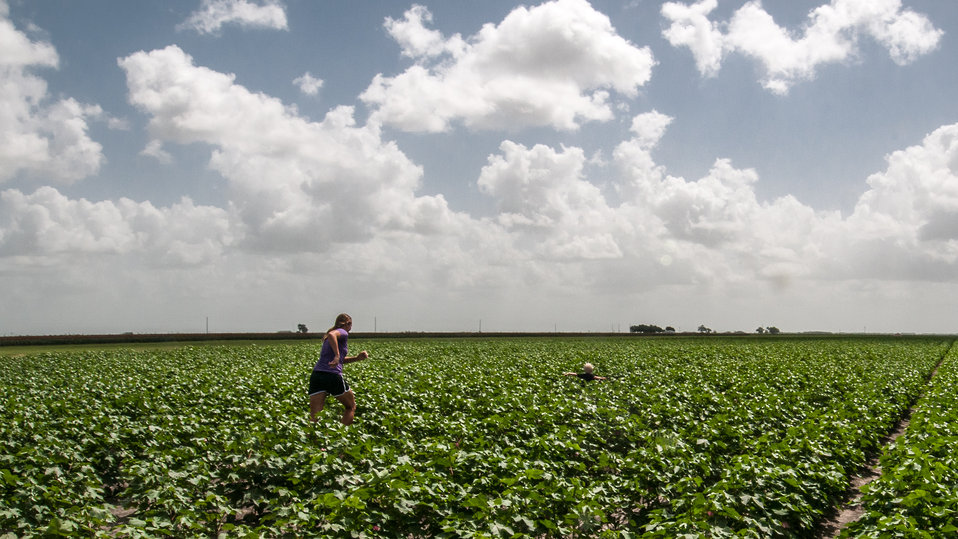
Melissa Popp (pronounced Pope) chases after son Hayden (2 ) through a cotton field in El Campo, TX on Jun. 20, 2013. The multi generational farm operation currently grows cotton and milo (sorghum) and are part of the United Agricultural Cooperative, Incorporated.The family hopes Hayden is a future farmer.